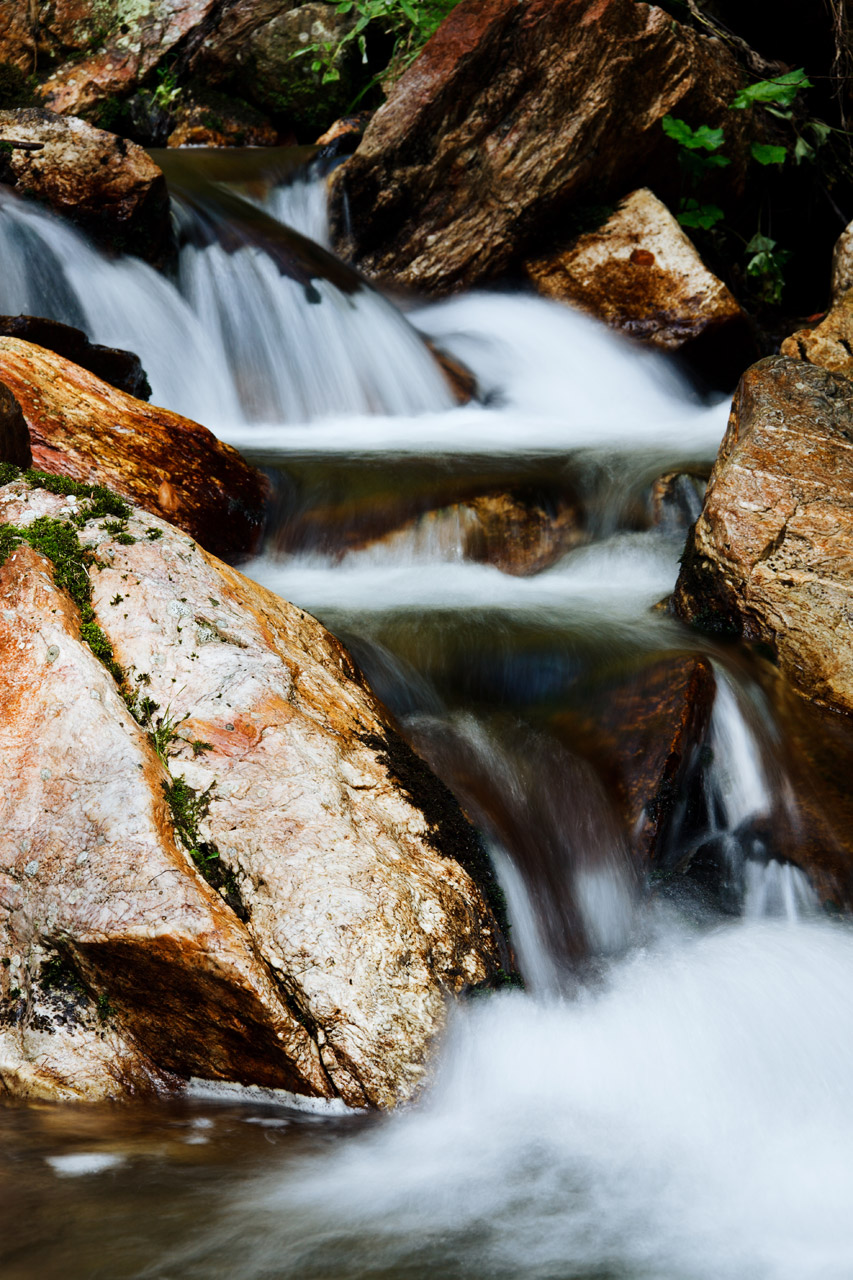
Small waterfall

Mountain stream waterfall at bila opava walk in czech republic.